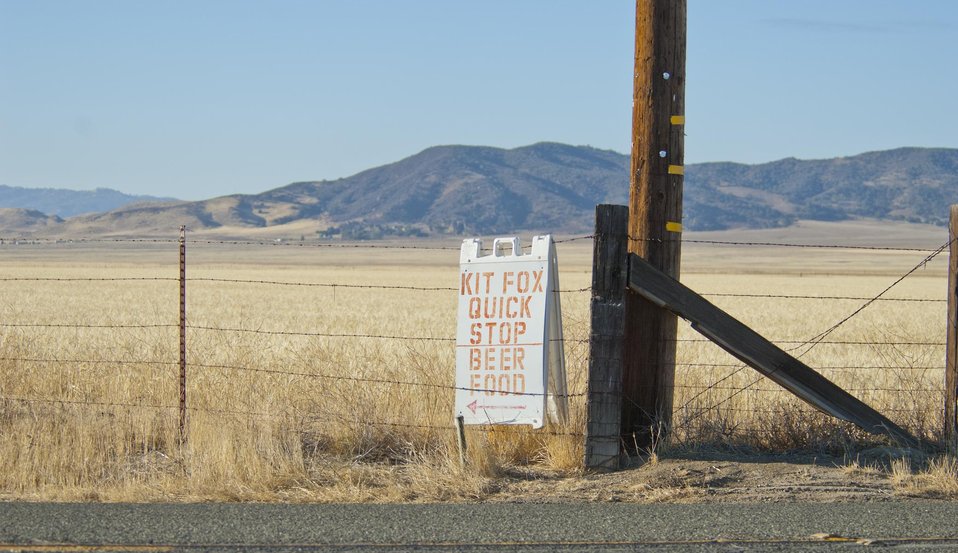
Kit Fox Quick Stop in the CarrizoPlain